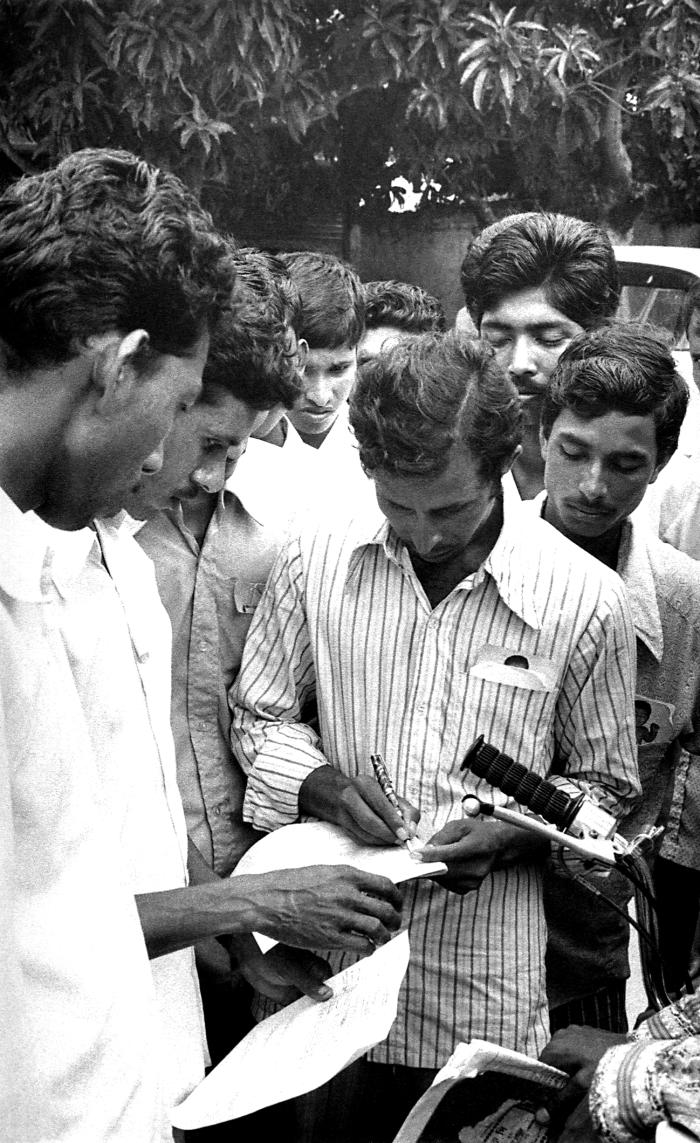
This 1975 photograph depicted a volunteer smallpox eradication team member who'd been making his appointed rounds while riding a motor scooter. Here he was shown amongst a group of town residents gathering information regarding the whereabouts of any existing local smallpox cases, by having these residents fill out the requisite search forms. When a resident did report a smallpox case to the eradication team, the patient's name was entered into the 'Containment Book', which was a ledger, that recorded all of the names of anyone living in, or within one half of a mile from a smallpox case, and subsequently all those listed were vaccinated against smallpox. Those vaccinated were followed until a 'successful' vaccination was observed.